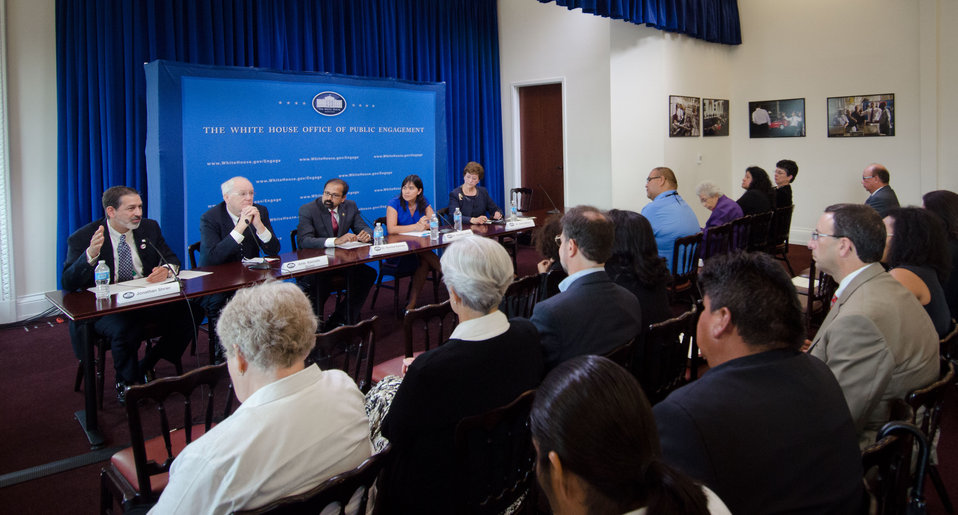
U.S. Department of State Global Food Security Acting Special Representative Jonathan Shrier (left) moderated the panel of honorees who’s work focuses on international hunger efforts to reduce hunger and increase food security in the U.S. and internationally at the White House Champions of Change Strengthening Food Security at Home and Abroad Event held at the White House on Thursday, September 6, 2012, in Washington, D.C.